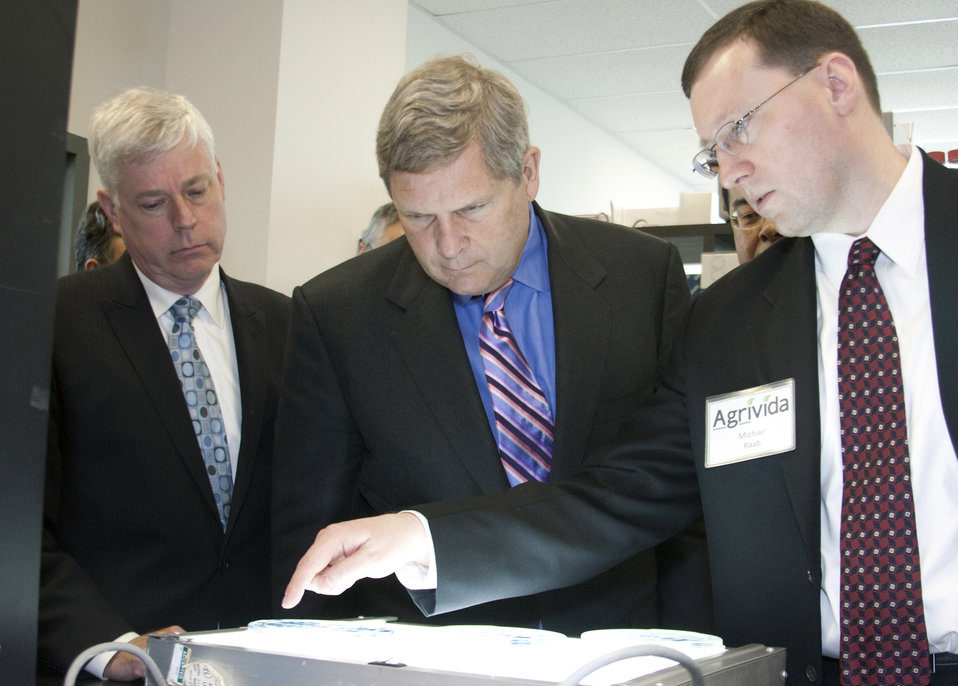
Agriculture Secretary Tom Vilsack visited Agrivida Inc., in Medford, MA, on Friday, May13, 2011. Agivida Inc. is a local company involved in developing new technologies to produce the next generation of biofuels, which will support economic development in rural America. Agrivida Inc. is developing methods to reduce the cost of converting biofuel feedstocks into sugar, focusing on sorghum, corn stover, and switchgrass. (L to R) Massachusetts State Energy Secretary Richard Sullivan, Agriculture Secretary Tom Vilsack, and Agrivida executive Dr. Michael Raabhe Secretary looking at agar plates that show how enzyme activity can be regulated and used to degrade cellulose.